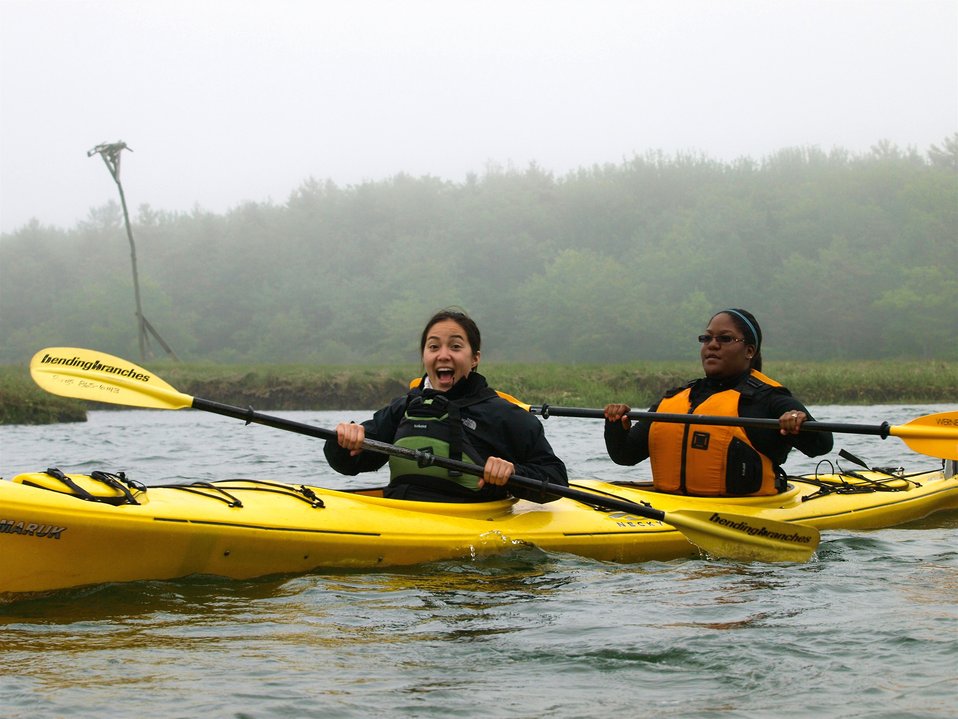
Rachel Carson NWR Lamar Gore USFWS

Rachel Carson National Wildlife Refuge in Maine hosts an eight-week Youth Conservation Camp every summer and as you can see, it’s not all work and no play.